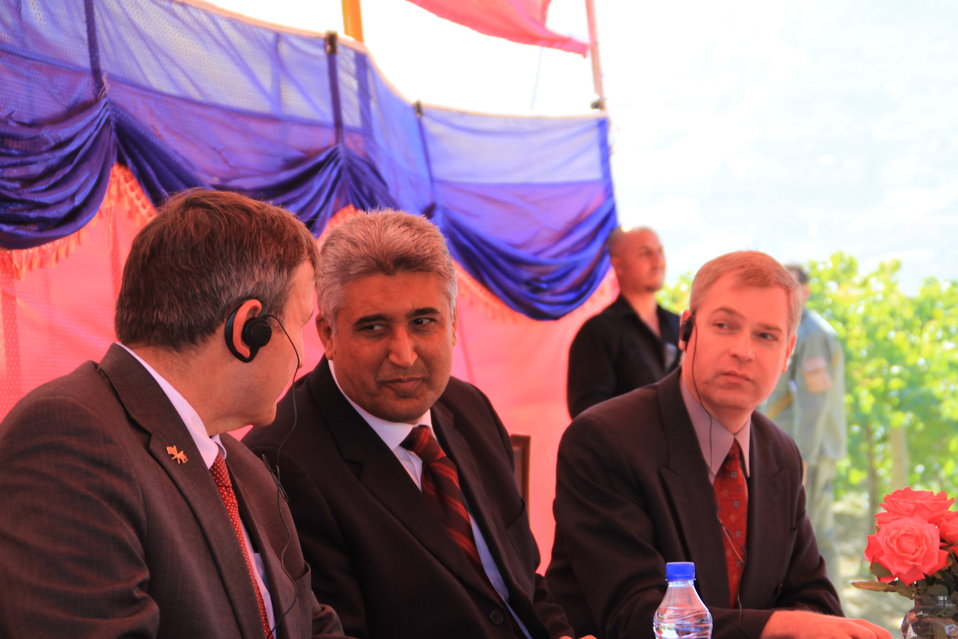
AVIPA Plus Wheat Seed Distribution 101005

US Ambassador Karl Eikenberry and USAID Acting Mission Director Kevin Brownawell joined the Minister of Agriculture, Irrigation and Livestock, H.E. Minister Mohammed Rahimi in signing a Memorandum of Understanding and distributing vouchers to area farmers for wheat and fertilizer.

US Ambassador Karl Eikenberry and USAID Acting Mission Director Kevin Brownawell joined the Minister of Agriculture, Irrigation and Livestock, H.E. Minister Mohammed Rahimi in signing a Memorandum of Understanding and distributing vouchers to area farmers for wheat and fertilizer.